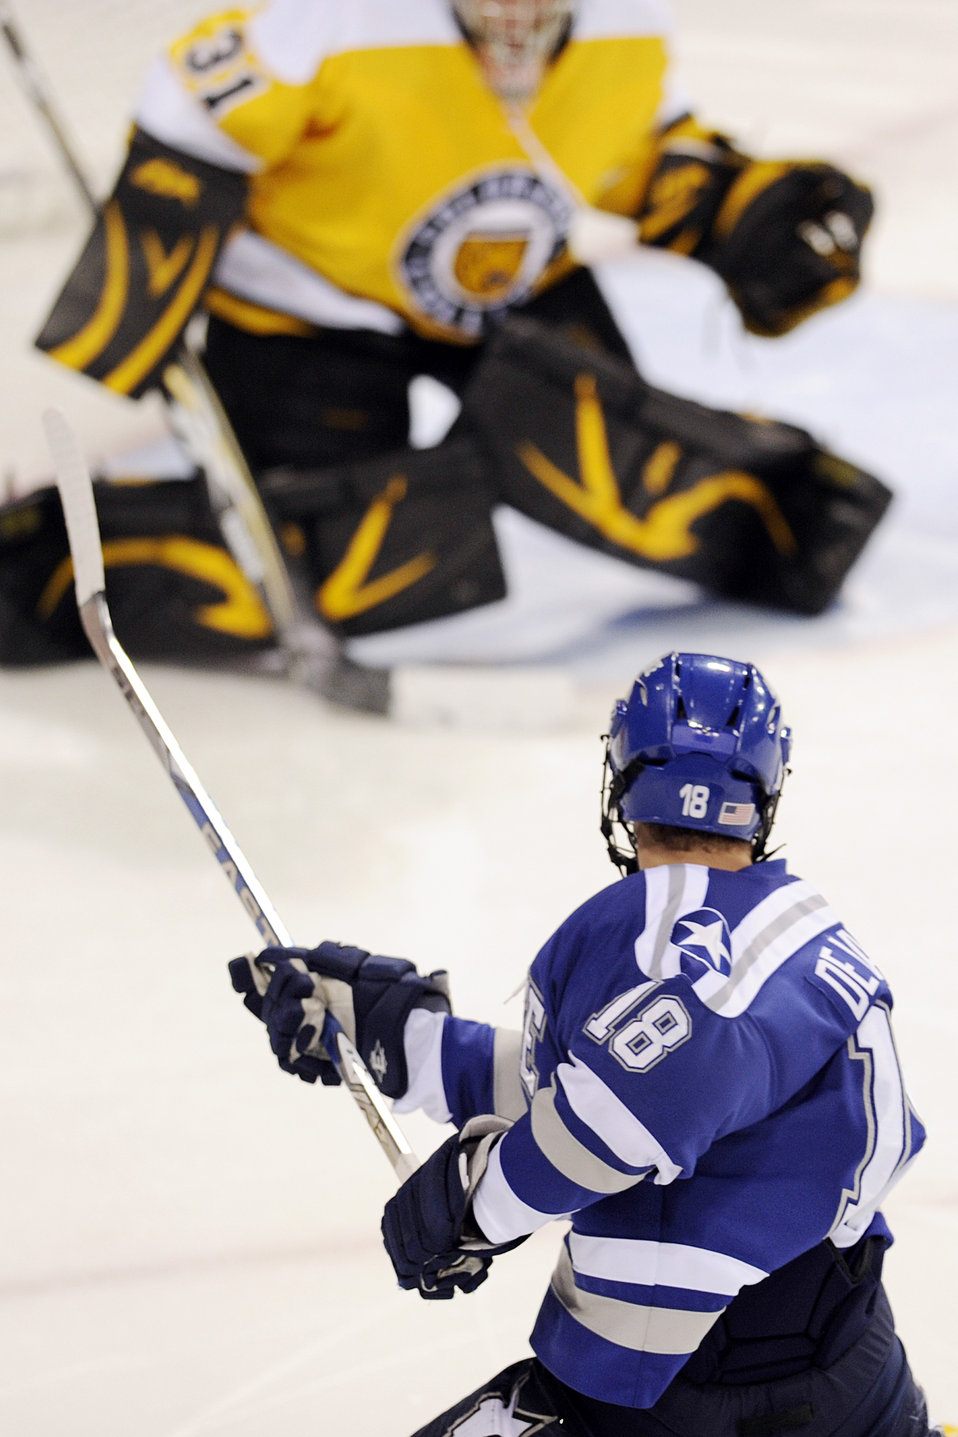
Falcons lose in match with Colorado Tigers

Colorado College goalkeeper Joe Howe protects the goal from Falcon freshman Kyle De Laurell as 10th-ranked Colorado College beat Air Force 2-0 in a non-conference hockey game Feb. 5, 2010, at the World Arena in Colorado Springs, Colo.